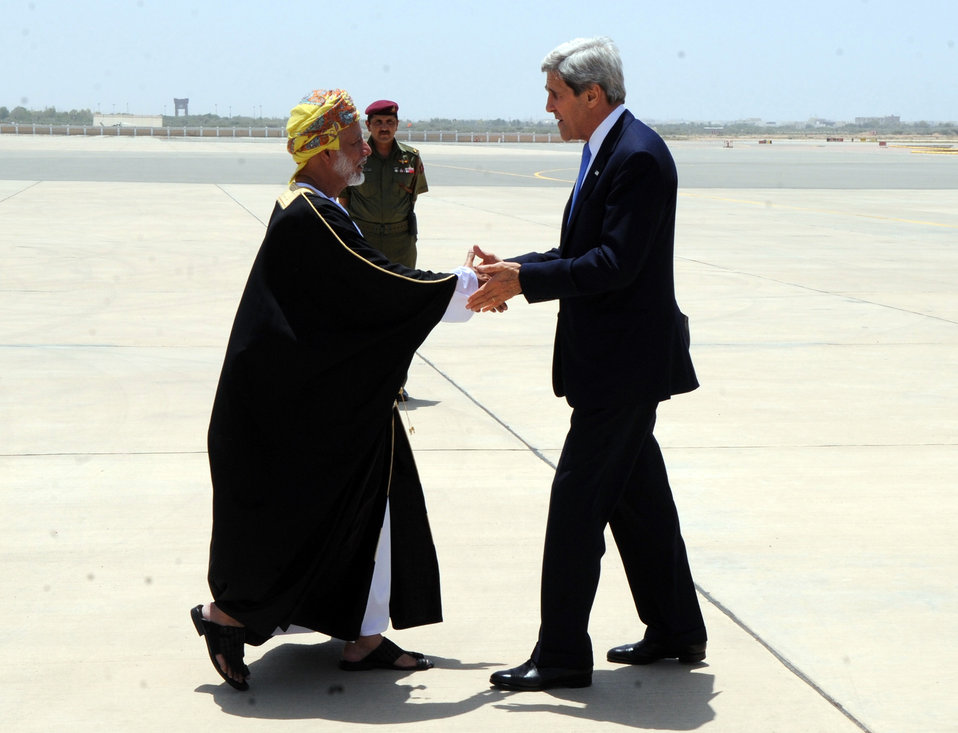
Secretary Kerry Is Greeted By Omani Foreign Minister Yussef bin Alawi bin Abdullah

U.S. Secretary of State John Kerry is greeted by Omani Foreign Minister Yussef bin Alawi bin Abdullah upon arriving Muscat, Oman, on May 21, 2013.